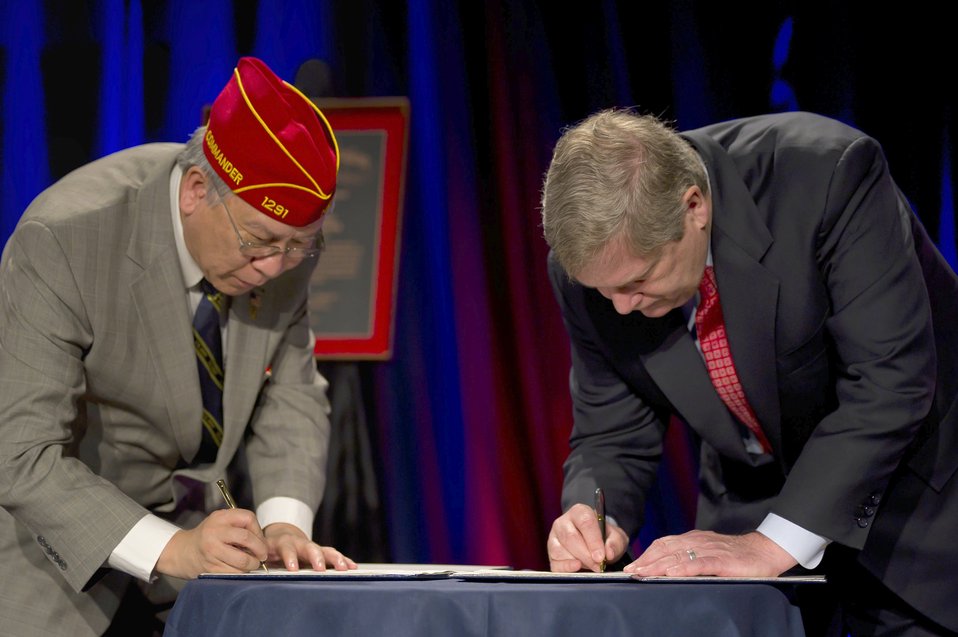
U.S. Secretary of Agriculture Tom Vilsack and Fang Wong, National Commander
of the American Legion, sign a memorandum of understanding with the American Legion which will help our Nation's veterans and transitioning military service members find positions that promote agriculture, animal and plant health, food safety, nutrition, conservation and rural communities at the Washington Hilton in Washington, D.C., on Tuesday February 28, 2012.